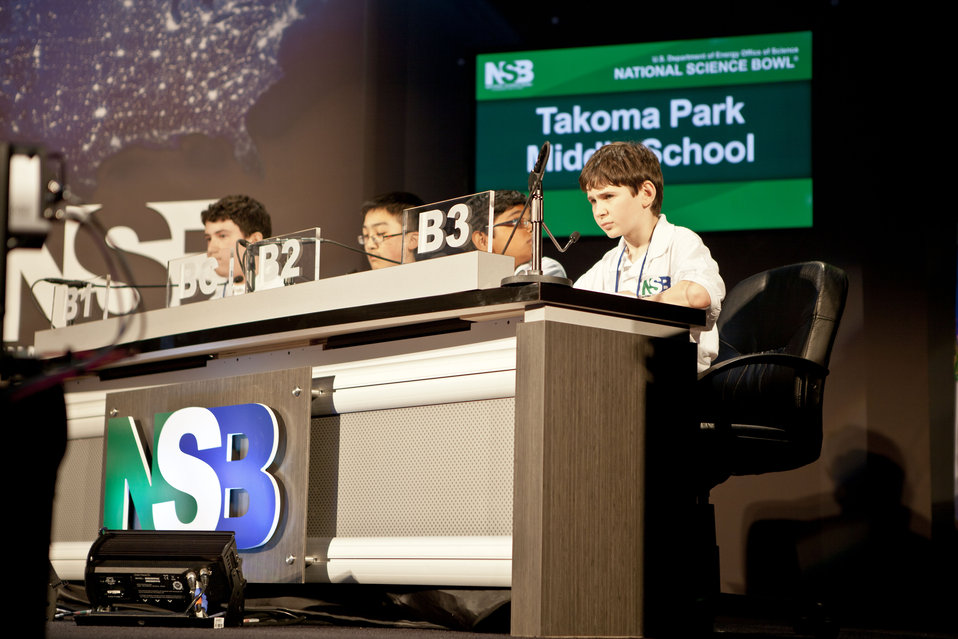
National Science Bowl 2013

Noah Singer, left, David Wu, Anish Senapati and Eliot Kienzle from Takoma Park Middle School in Silver Spring, Maryland compete in the final round of the 2013 National Science Bowl at the National Building Museum, Monday, April 29, 2013, in Washington, DC. Creekside Middle School beat Takoma Park Middle School in the 2013 National Science Bowl Championship.